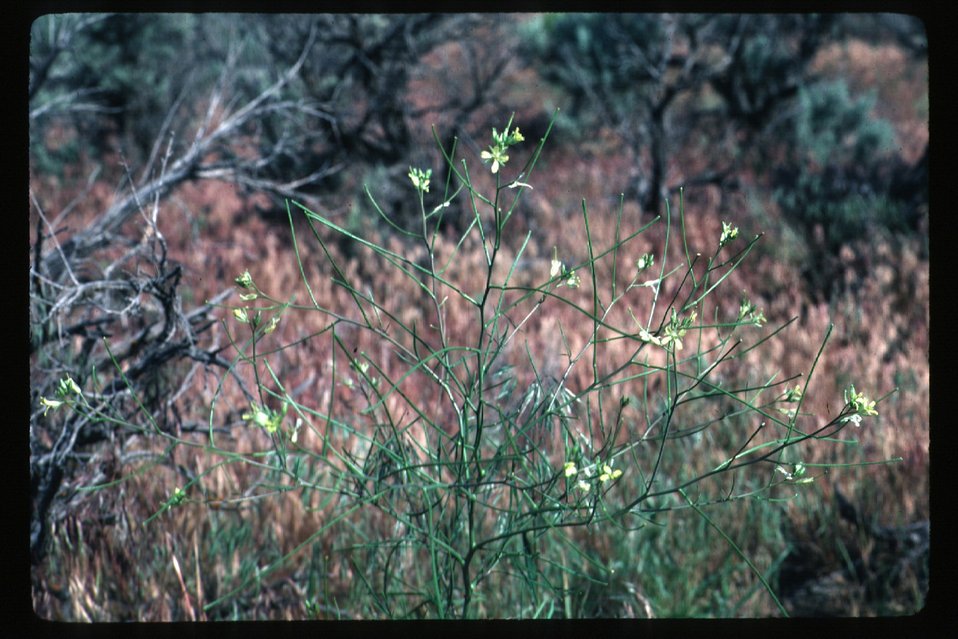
Sisybirium officianalis Brush, grasses Wildflowers